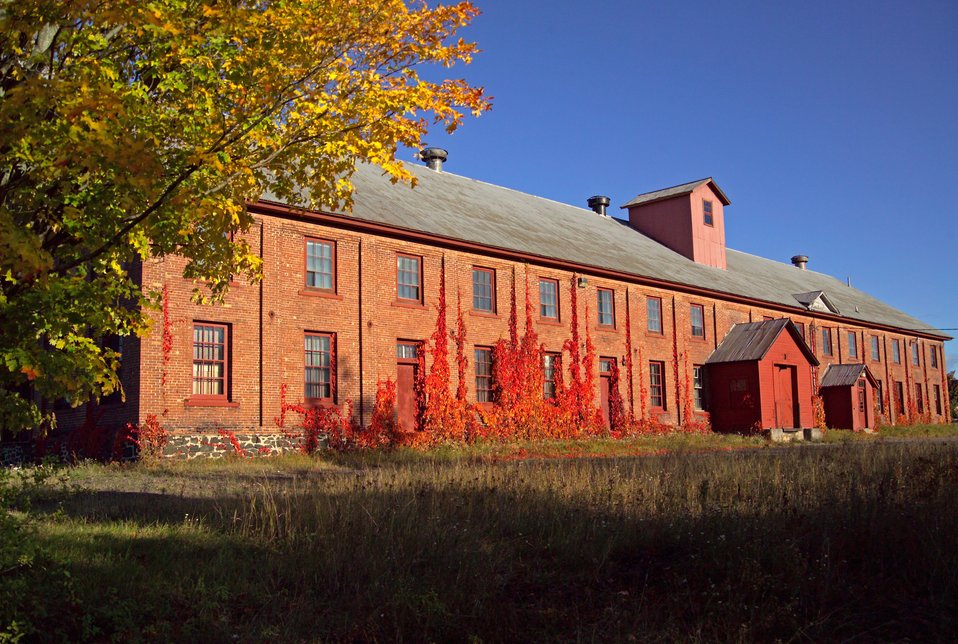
Calumet Hecla Copper Mining Co. offices with fall foliage